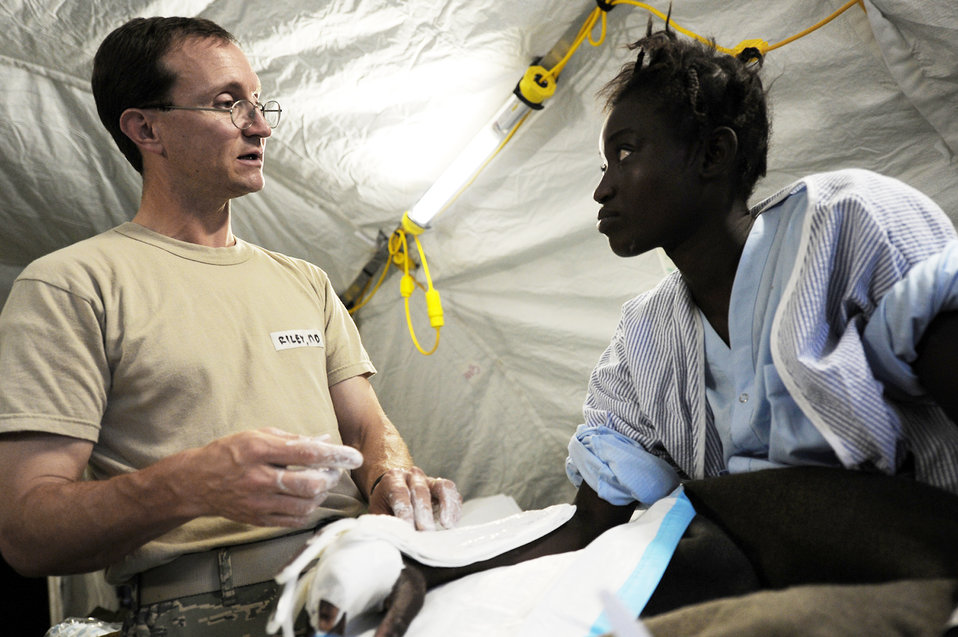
Airmen provide care, compassion to people of Haiti

An Airman from Travis Air Force Base, Calif., treats an earthquake survivor at an expeditionary medical facility Feb. 3, 2010, located along the harbor of Port-au-Prince, Haiti. A 7.0-magnatude earthquake struck Haiti Jan. 12, leaving thousands of Haitians displaced and without access to food, water and vital medical care.